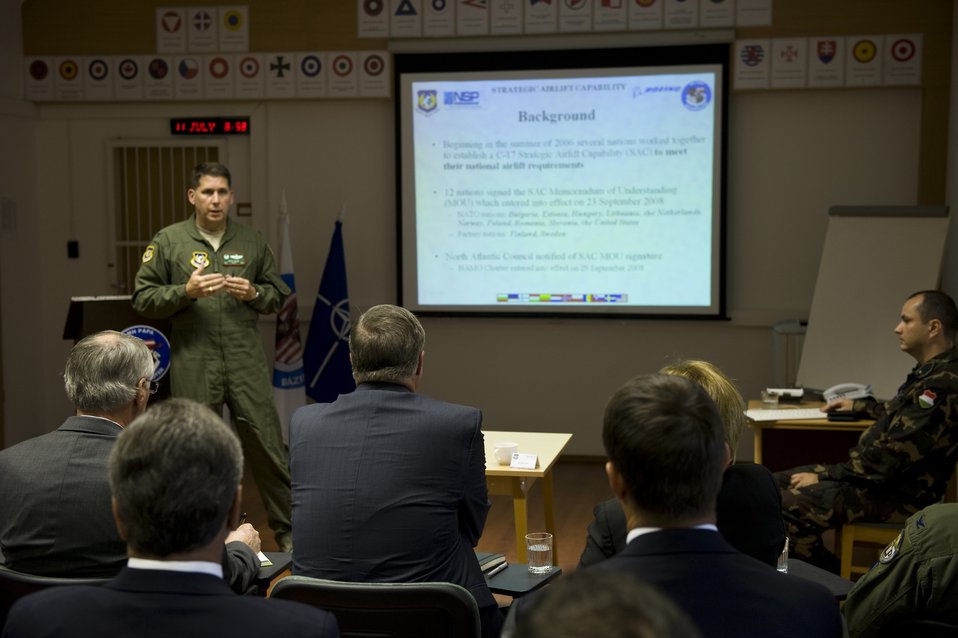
SecAF greets Airmen 2

Col. Keith Boone, commander of the Heavy Airlift Wing gives an operations briefing to Secretary of the Air Force Michael Donley during his visit to Pápa Air Base, Hungary, July 11, 2012. The secretary visited the HAW to speak with Airmen about the direction of the Air Force, meet with them on the job and learn what's on their minds.